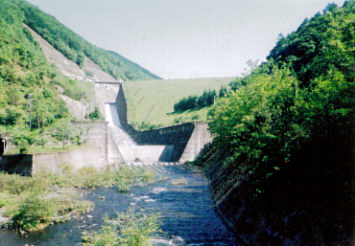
Dam